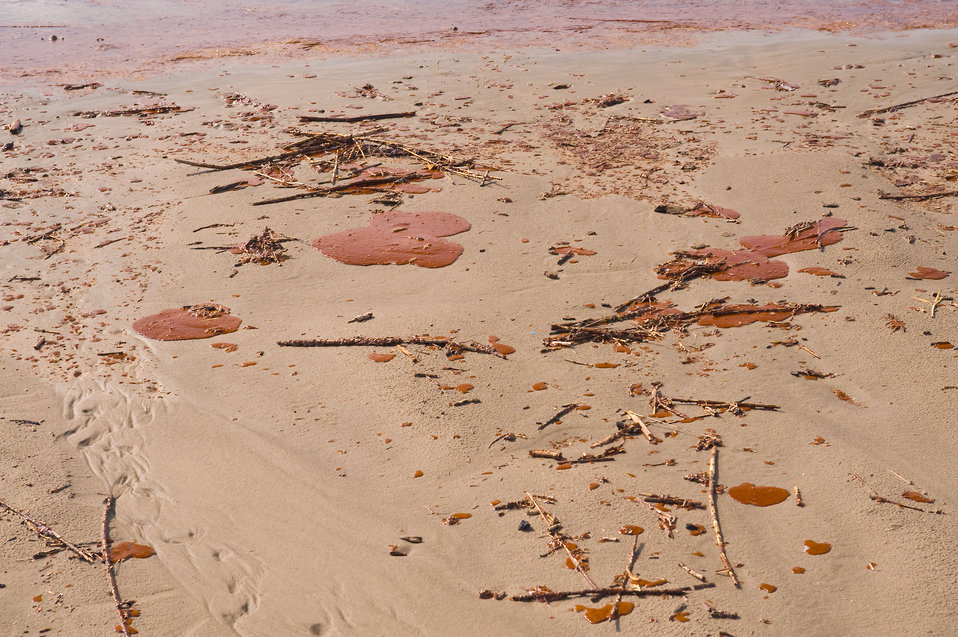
June 3, Oil washes ashore in different forms Grand Isle, La

Oil can come ashore as tarballs, 'mousse' or weathered into other forms depending on the wind, temperature and wave conditions it became exposed to.